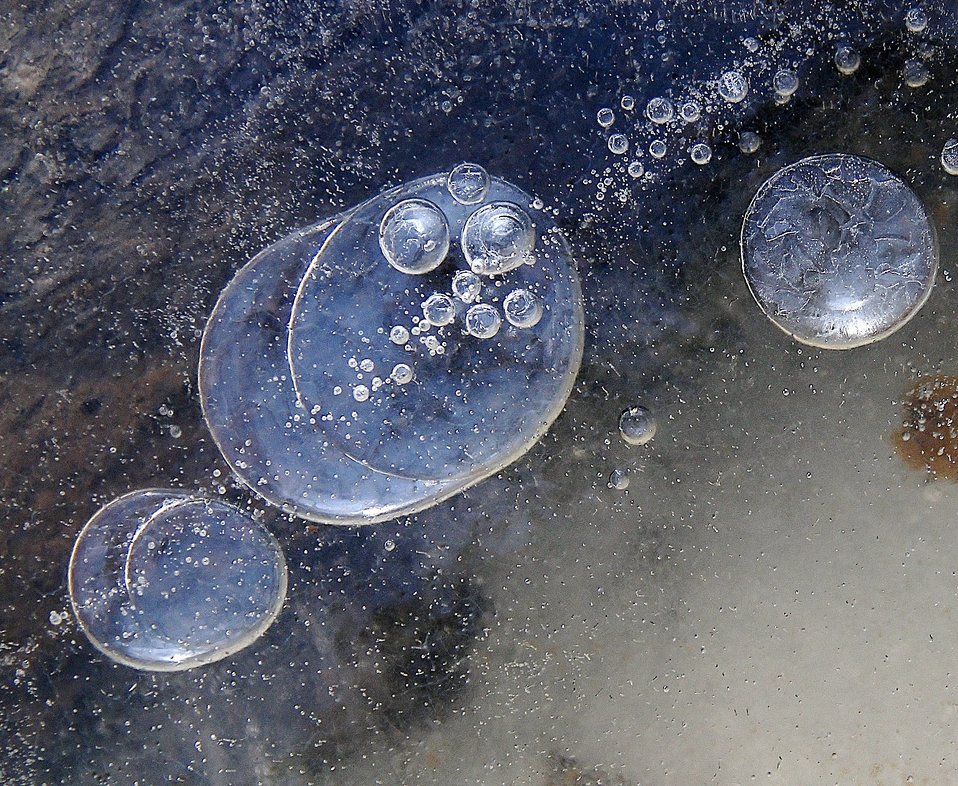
Crystals and ice

Missisquoi National Wildlife Refuge offers beauty even in the frozen depths of winter. Sometimes closer observation can be rewarding.